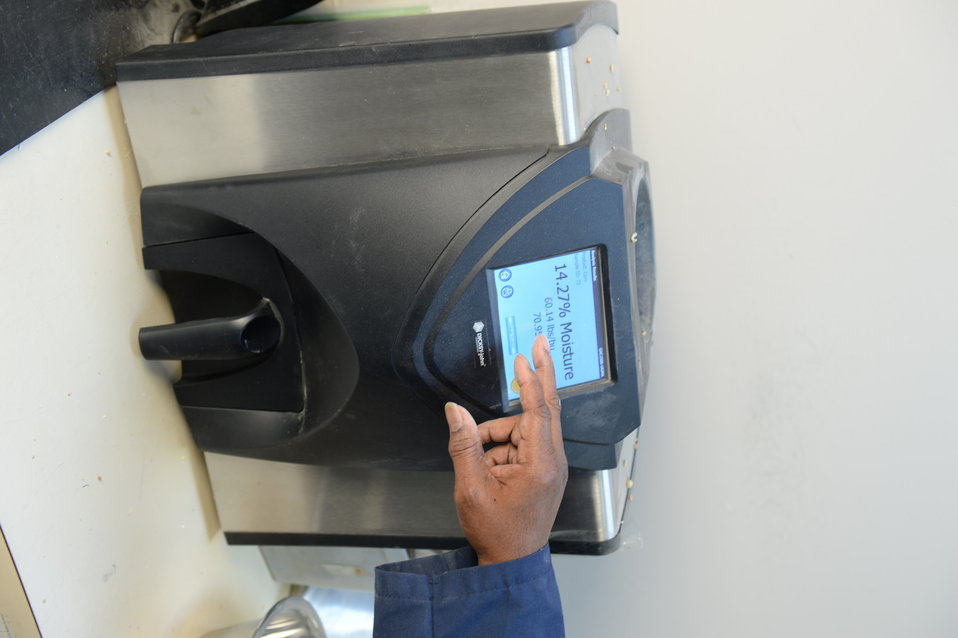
A U.S. Department of Agriculture (USDA) Grain Inspection, Packers and Stockyards Administration (GIPSA) Federal Grain Inspection Service (FGIS) scientist tests corn at the FGIS inspection laboratory in New Orleans, LA on Monday, Nov. 18, 2013.